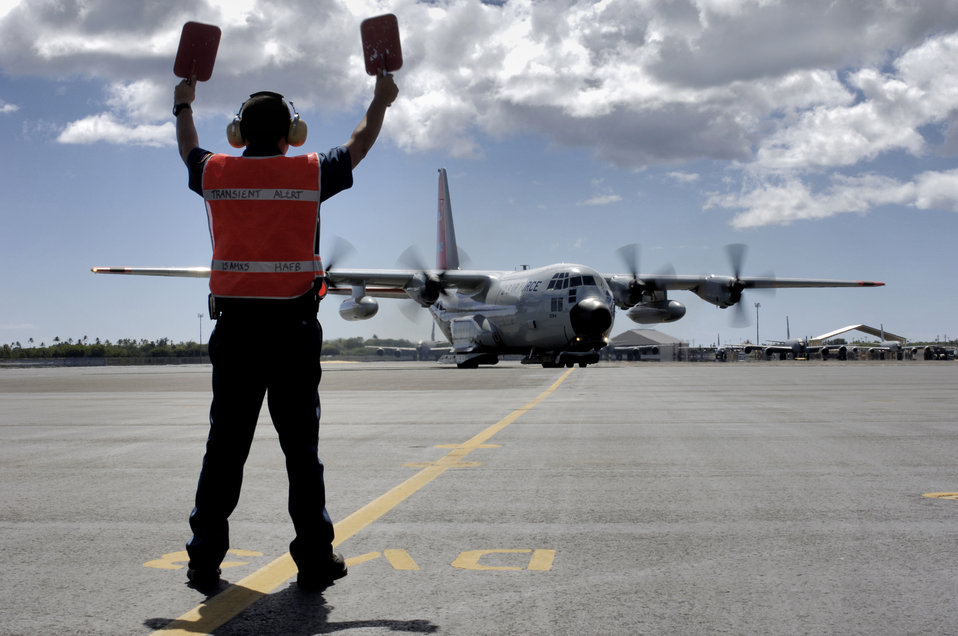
Operation Deep Freeze

HICKAM AIR FORCE BASE, Hawaii -- Phil Rhodes, marshals an LC-130 Hercules from the New York Air National Guard's 109th Airlift Wing to a parking space here. Through Operation Deep Freeze, the wing ensures scientists near the South Pole have the people and supplies they need to do research and study the planets harshest environment.